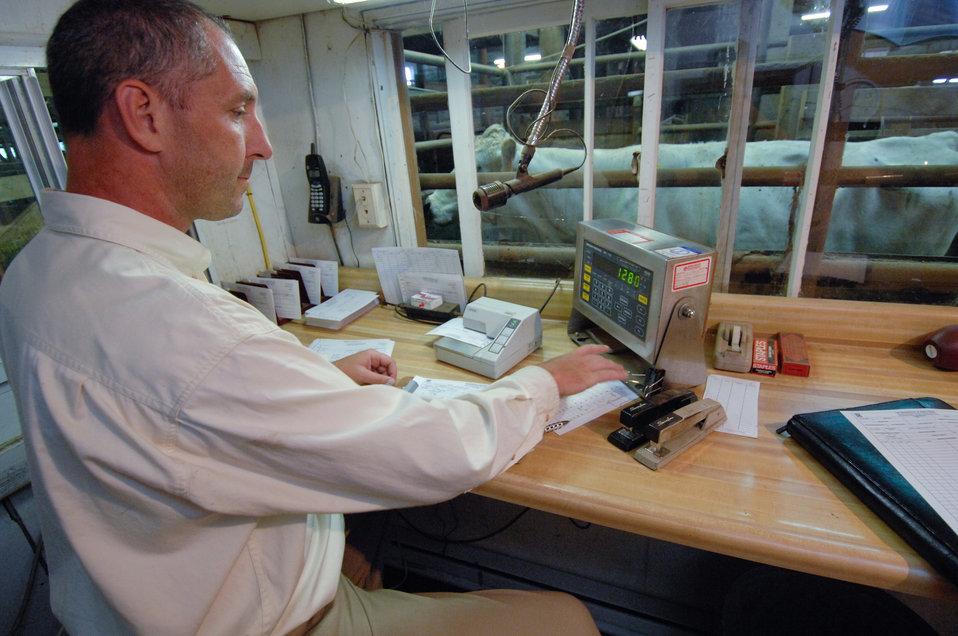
U.S. Department of Agriculture (USDA) Grain Inspection, Packers, and Stockyards Administration (GIPSA) resident agent Chris McClure performs a livestock check weigh in Paradise, Pennsylvania on July 22, 2008. GIPSA is a USDA agency that facilitates the marketing of livestock, poultry, meat, cereals, oilseeds, and related agricultural products, and promotes fair and competitive trading practices for the overall benefit of consumers and American agriculture.